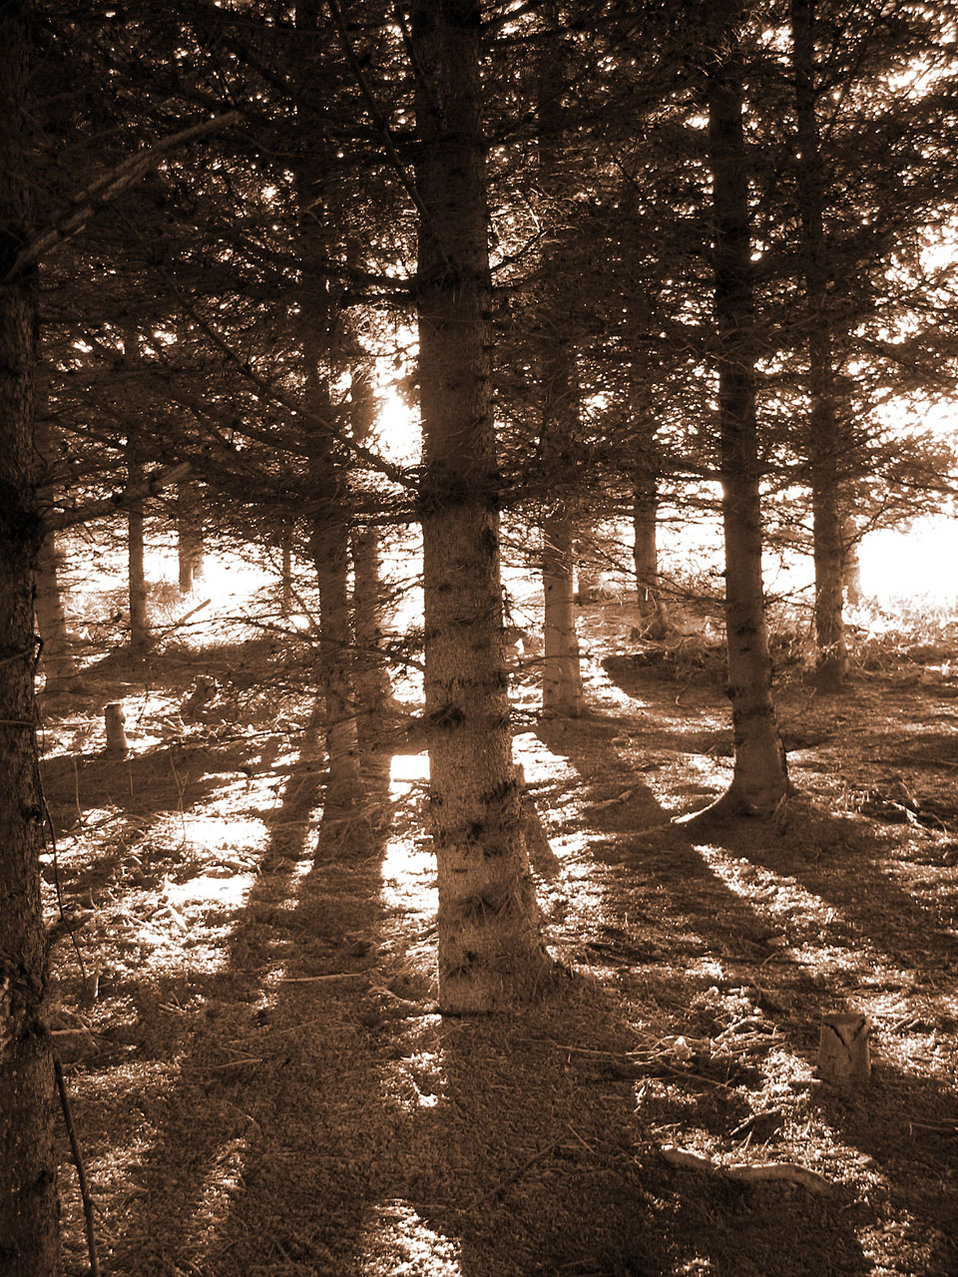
In the wood

A sunset in the forest.